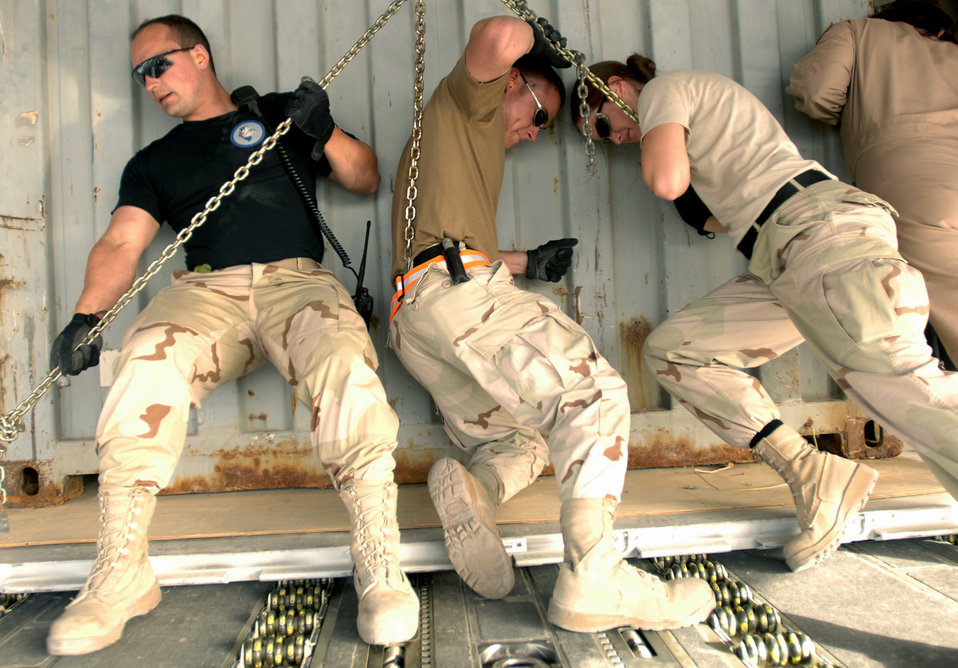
Aerial porters keep the Afghan missions moving

Staff Sgt. Aaron Witt, Senior Airmen Steven Bazar and Katherine Bunt push a military shipping container onto a C-17 Globemaster III. Approximately 2.1 million pounds of cargo are loaded per week in Southwest Asia. The aerial porter's current mission supports Operation Achilles, a campaign to create a secure environment and better quality of life for Afghan citizens. The Airmen are assigned to the 8th Expeditionary Air Mobility Squadron.